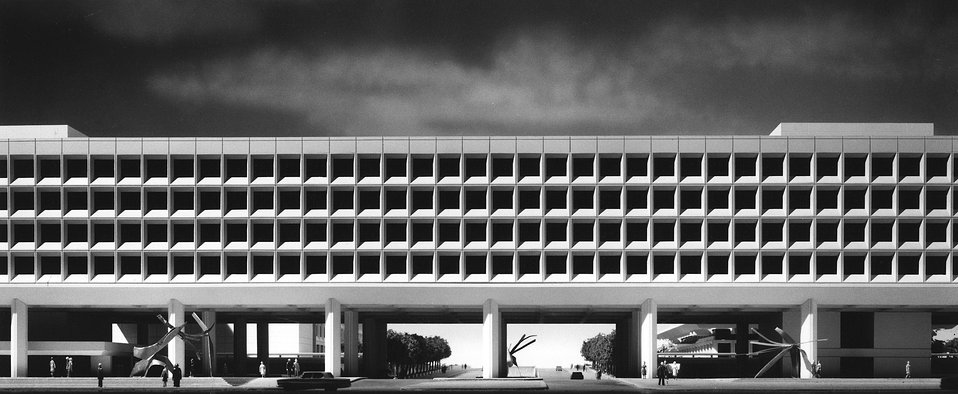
Federal Office building No. 5 Washington DC